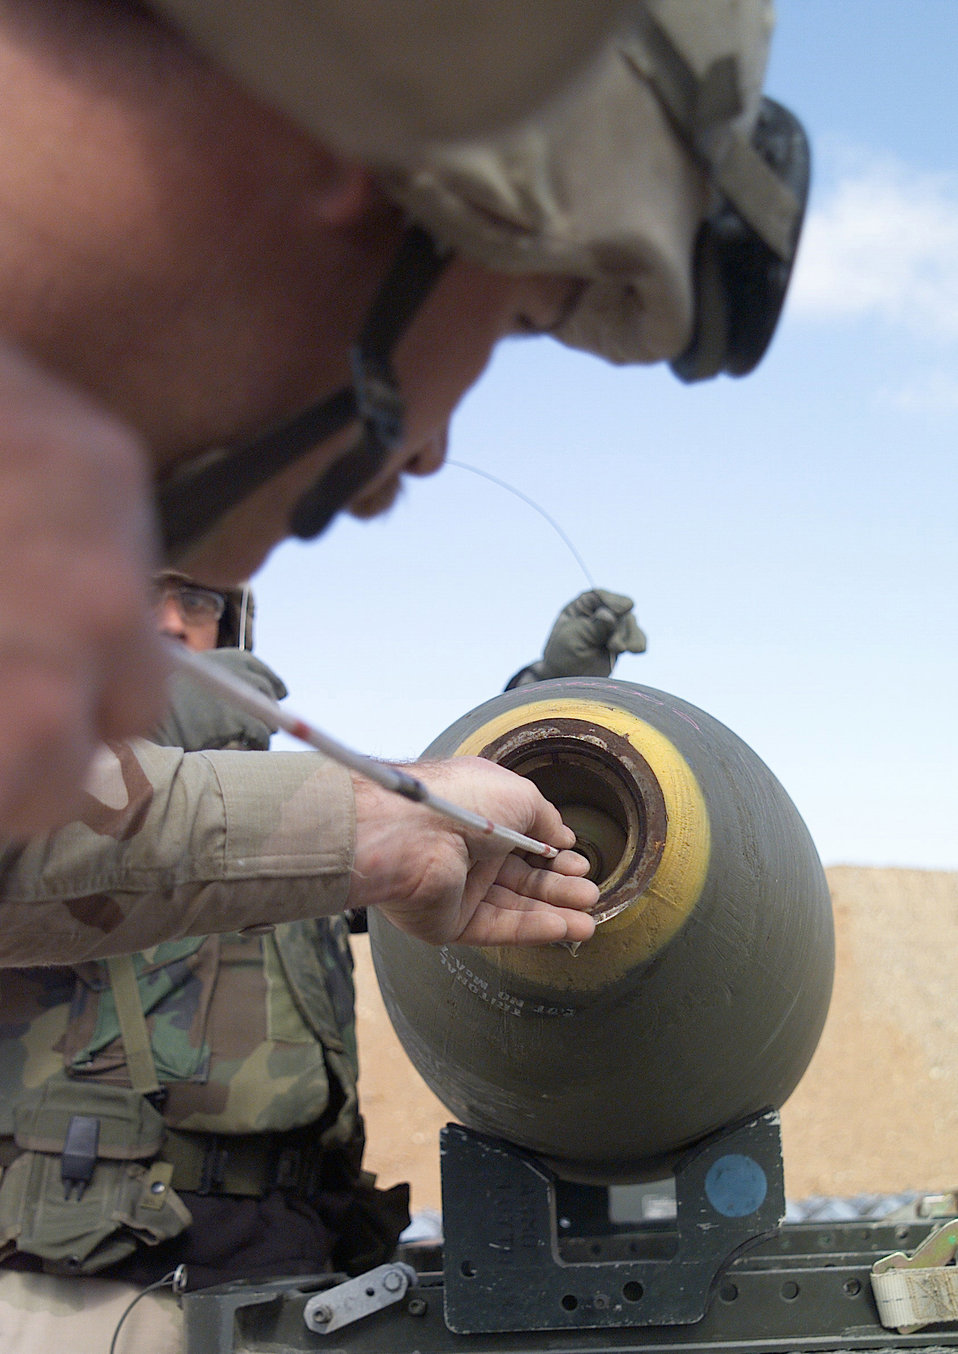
Long fuse

OPERATION IRAQI FREEDOM -- A 410th Air Expeditionary Wing maintenance troop guides a fuse through an air burst bomb in